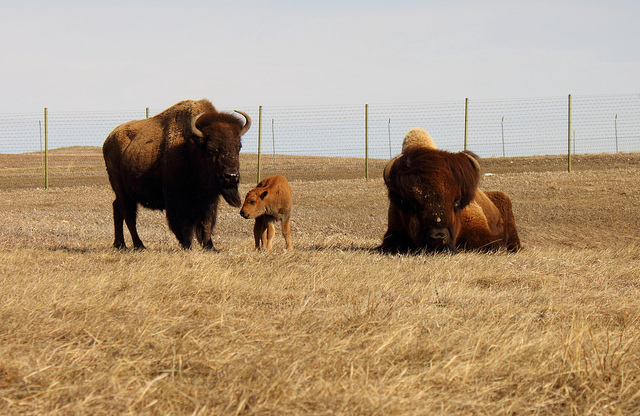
American bison family

Father Monte, mother Cinnamom and their four-day-old calf, April 2011
Charles M. Russell National Wildlife Refuge